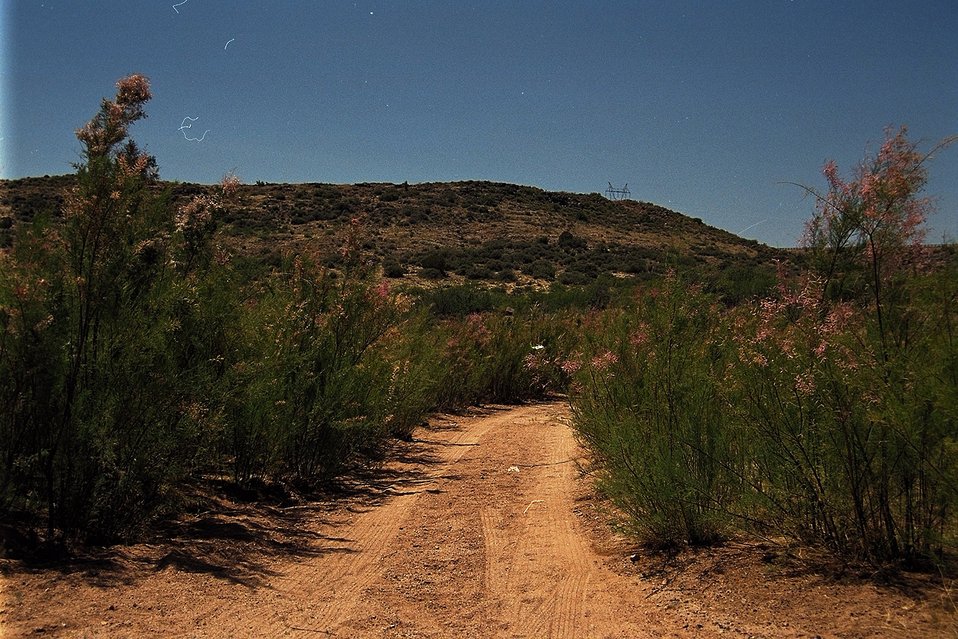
A road to Badger Springs in the Agua Fria National Monument.